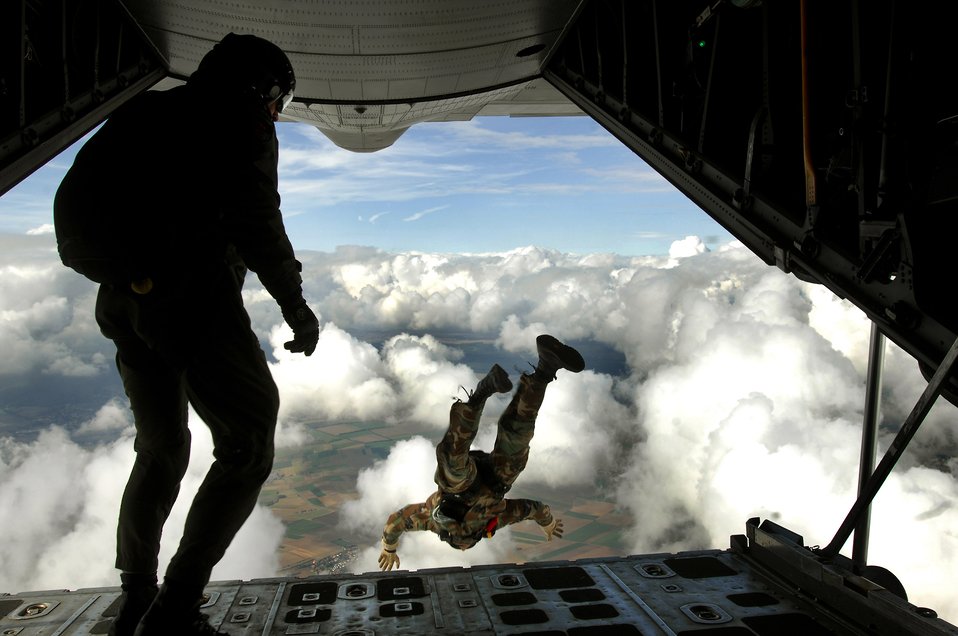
Here I go!

Preparing for an upcoming mission, pararescuemen jump out the back of a C-130 Hercules during jump training Sept. 24 over southwestern Germany. They are with the 786th Security Forces Squadron.